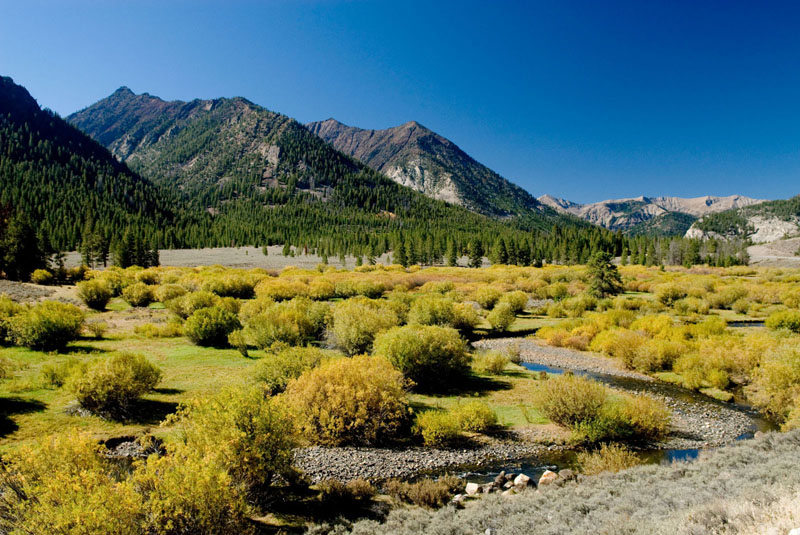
Sawtooth Mountains, Idaho, 2007 USEPA photo by Danny Hart